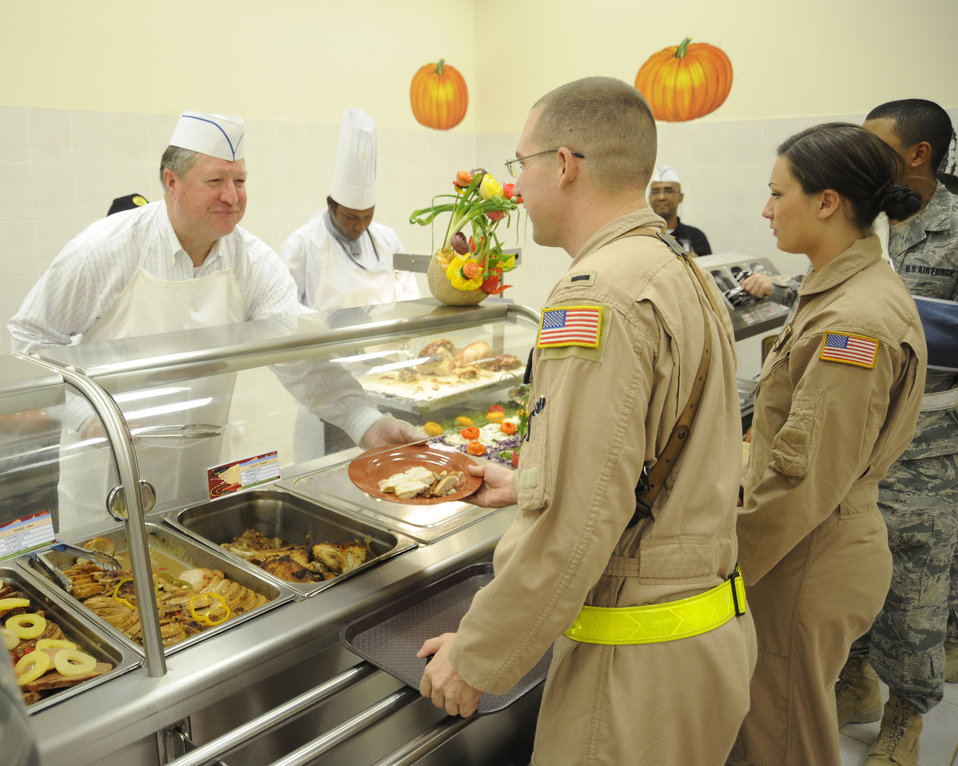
SECAF visit to JB Balad, Iraq

Secretary of the Air Force Michael Donley serves Thanksgiving dinner to Airmen at Joint Base Balad, Iraq, Nov. 25, 2010, during a visit of the base. Secretary Donley toured several squadrons and also addressed members of the 332nd Air Expeditionary Wing during an Airman’s Call. Lt. Gen. Mike Hostage, the commander of Air Forces Central Command, and Chief Master Sgt. of the Air Force James A. Roy also were present.